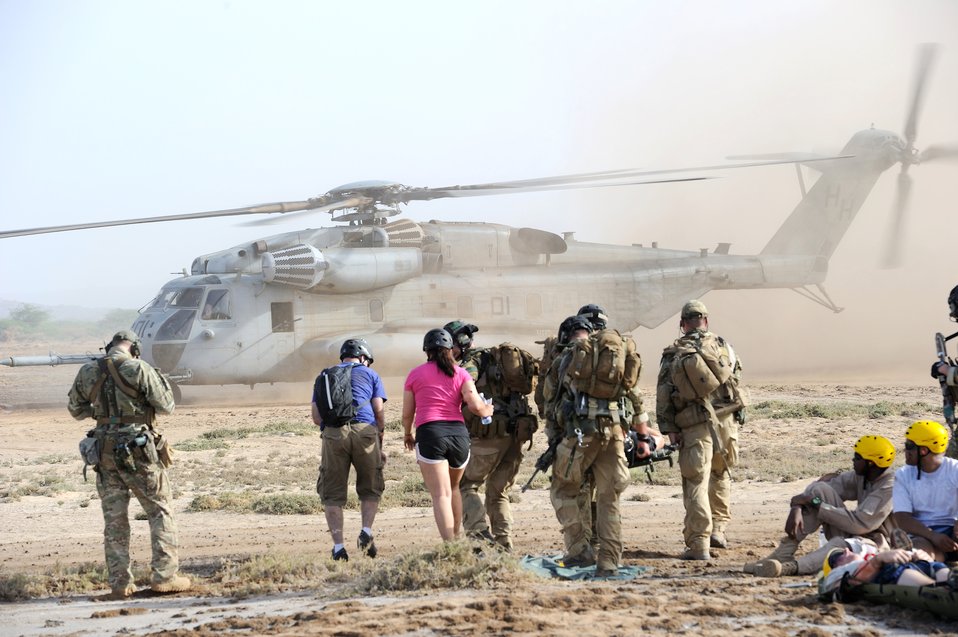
Airmen participate in African rescue exercise

A team of Air Force pararescuemen transports the injured to a waiting U.S. Marine Corps MH-53 Super Stallion helicopter while conducting a combat search and rescue exercise outside Camp Lemonnier, Djibouti, June 1, 2010.